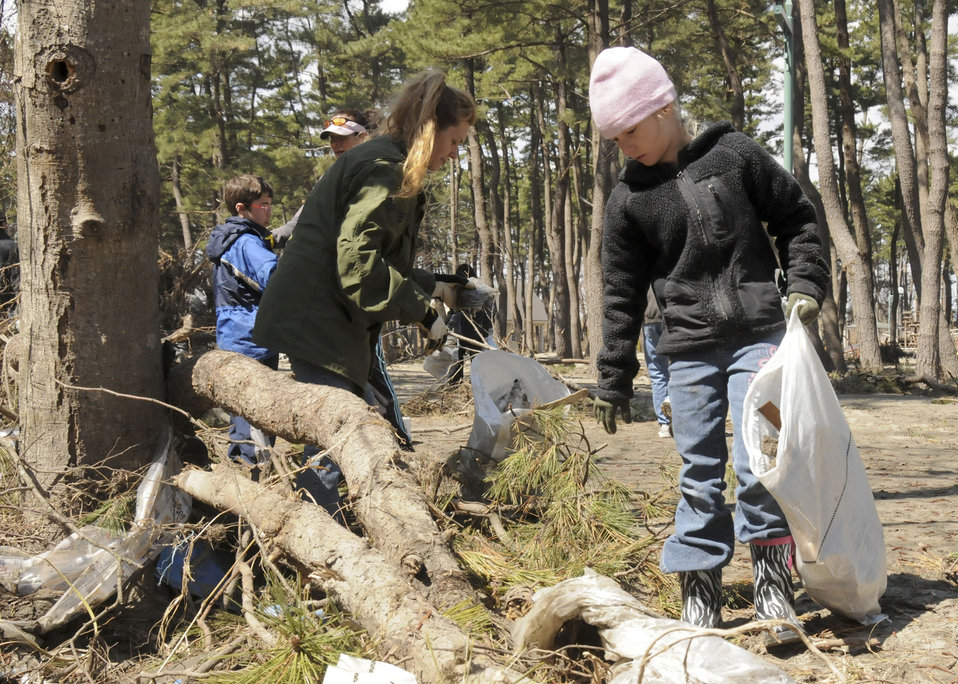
Children volunteer with Misawa Helps

Anyka Perzynski-Drilling, 8, and her mom, Lindsey Drilling, search for debris at a park April 12, 2011, in Hachinohe, Japan.